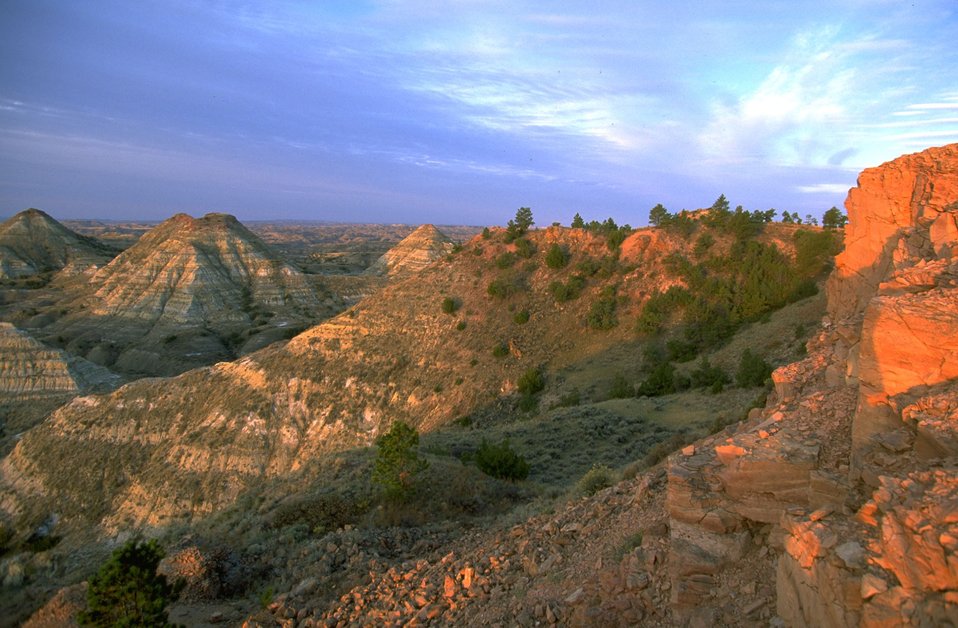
Terry Badlands Wilderness Study Area